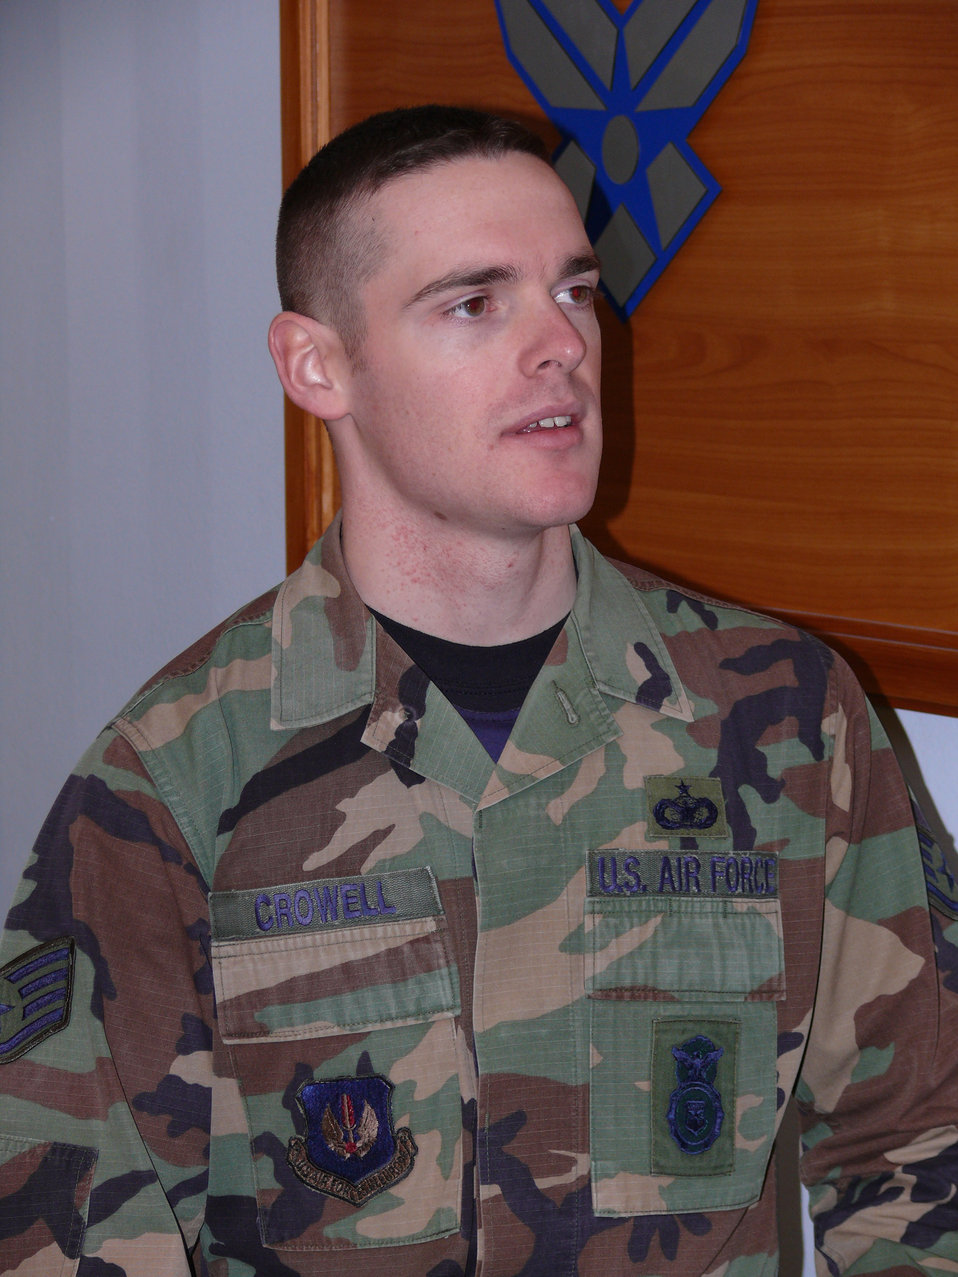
Serving through the season: Staff Sgt. Joey Crowell

Staff Sgt. Joey Crowell is a security forces Airman at U.S. Air Forces in Europe headquarters at Ramstein Air Base, Germany. As an area supervisor it's his job to ensure the commanders and facility are kept out of harm's way. That means working throughout the holidays.